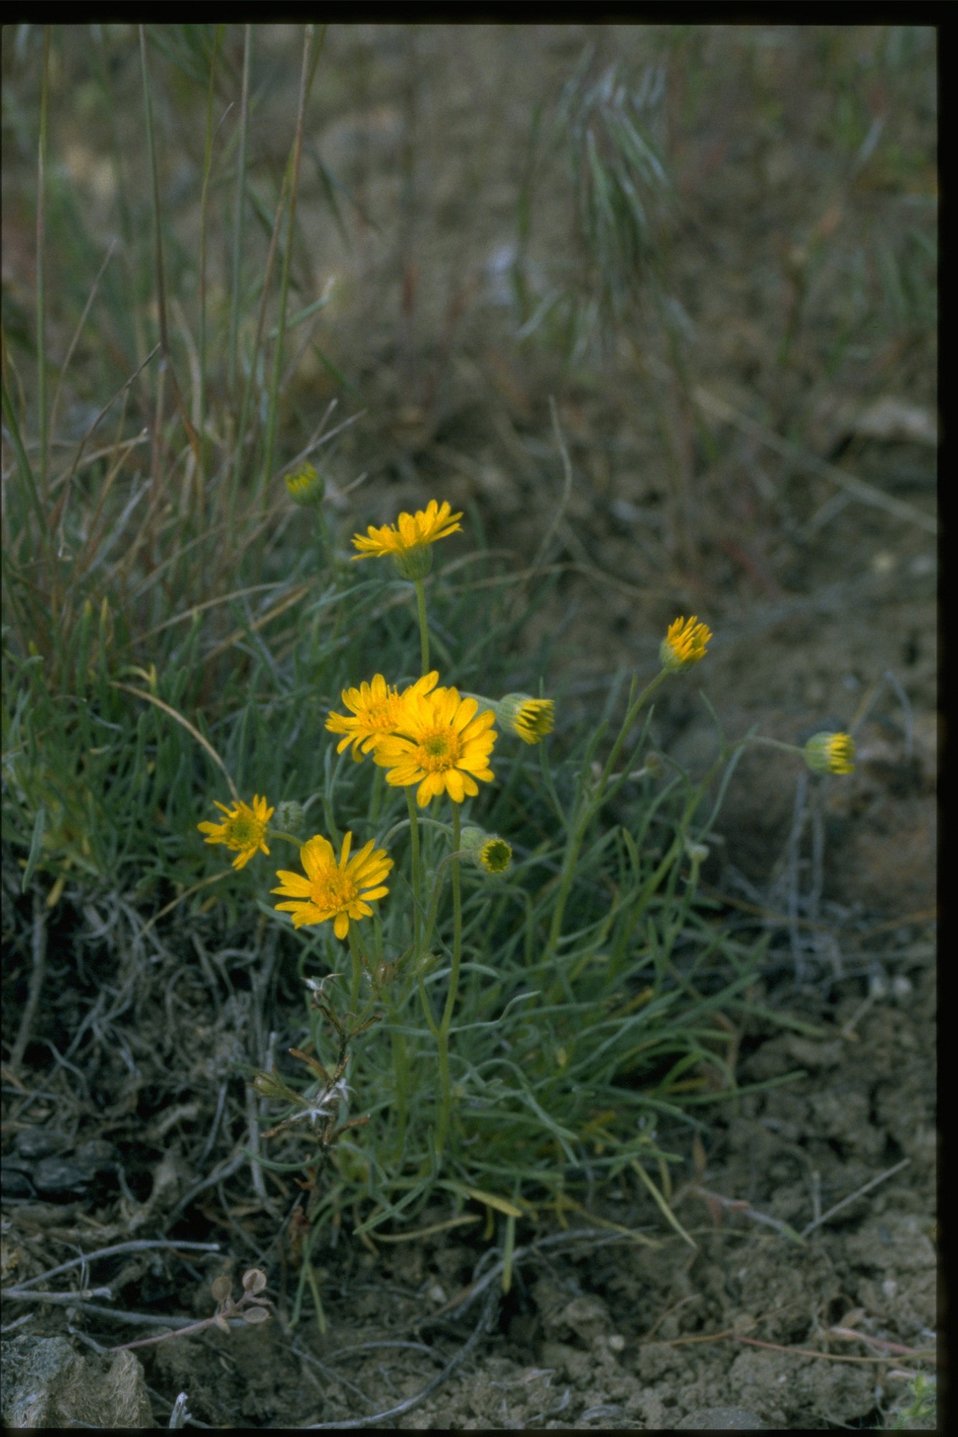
Farshot of Balsam Root wildflowers.